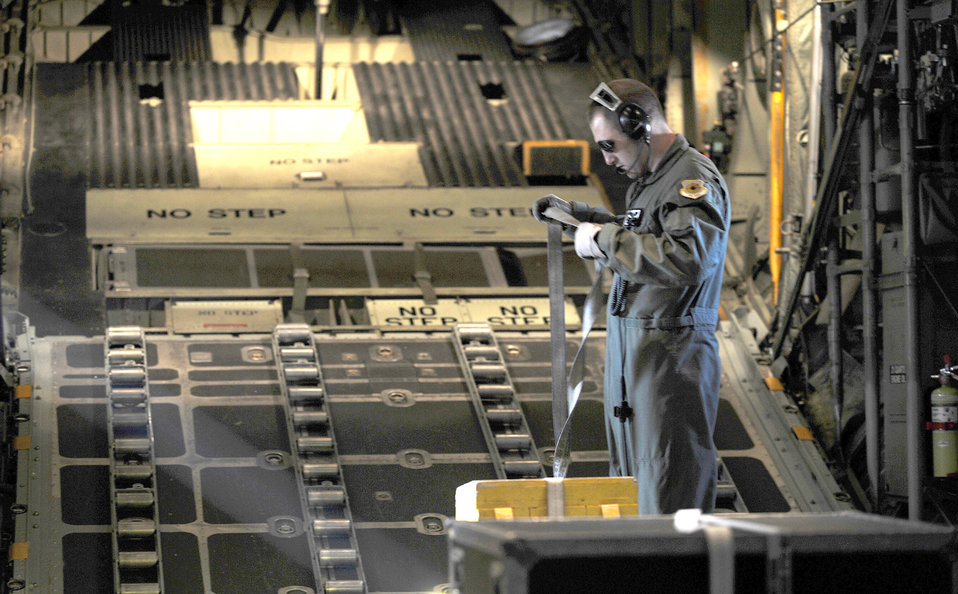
Mobility Air Forces Exercise

Staff Sgt. Grant Lane straps down a cargo box during a Mobility Air Forces Exercise Nov. 17, 2010, at Nellis Air Force Base, Nev. The exercise brought more than 40 C-17 Globemaster IIIs and C-130 Hercules to conduct air and ground operations. Sergeant Lane is assigned to the 29th Weapons Squadron at Little Rock Air Force Base, Ark.